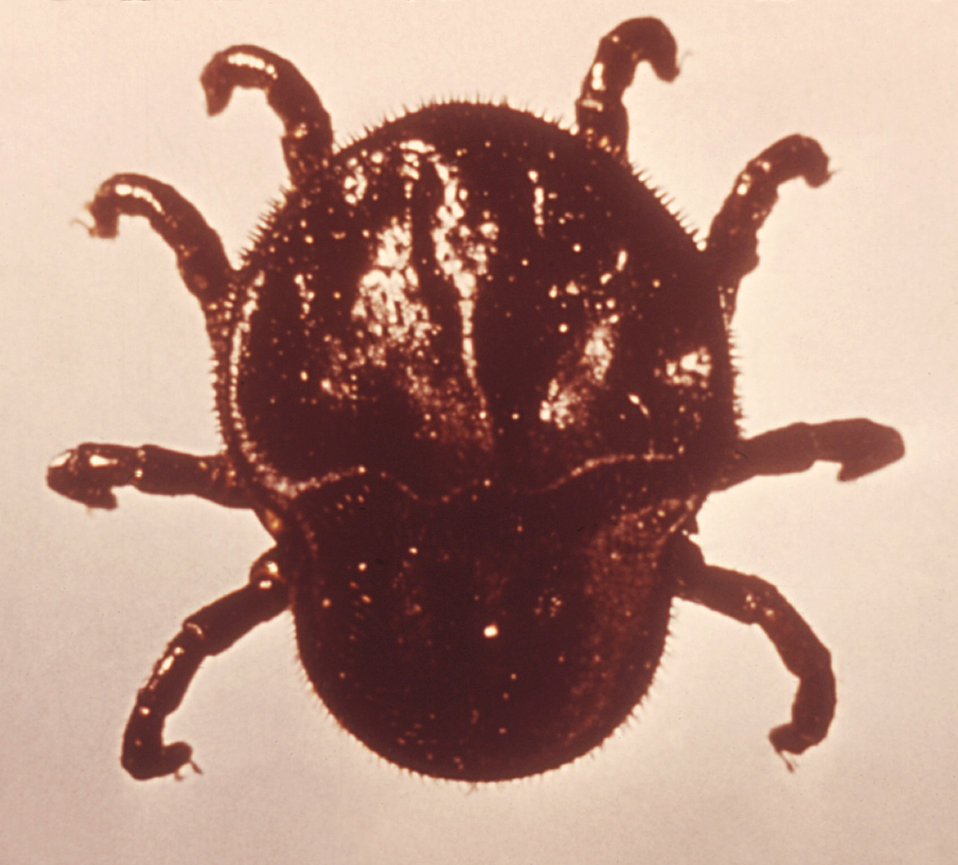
This is a nymph-staged North American soft tick from the genus Otobius with its spiny integument.